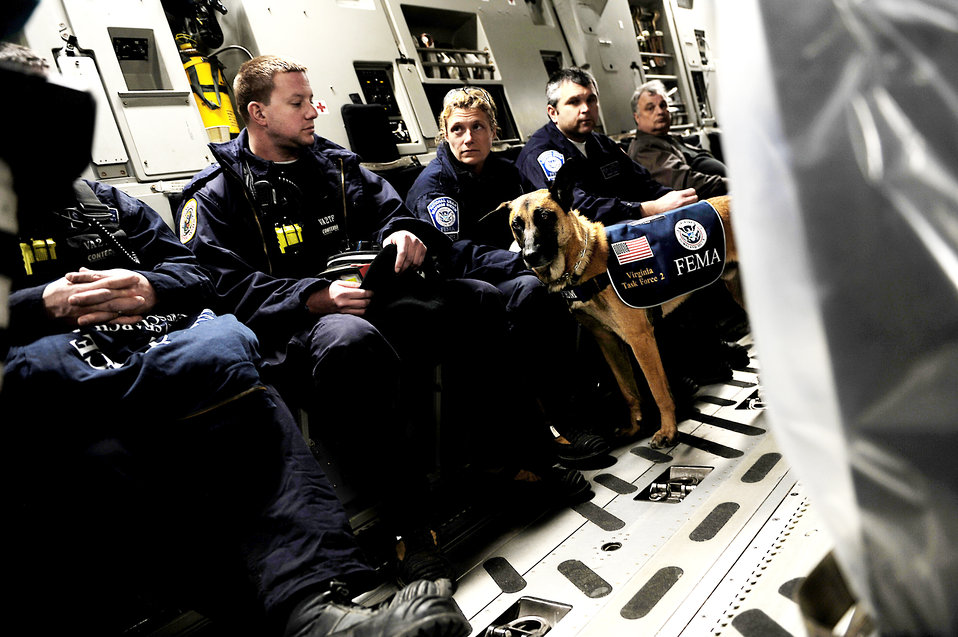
Haiti Earthquake Relief

Members from the Virginia Task Force 2 Urban Search and Rescue fly to Haiti aboard a C-17 Globemaster III Jan. 15, 2010, at Norfolk, Va.